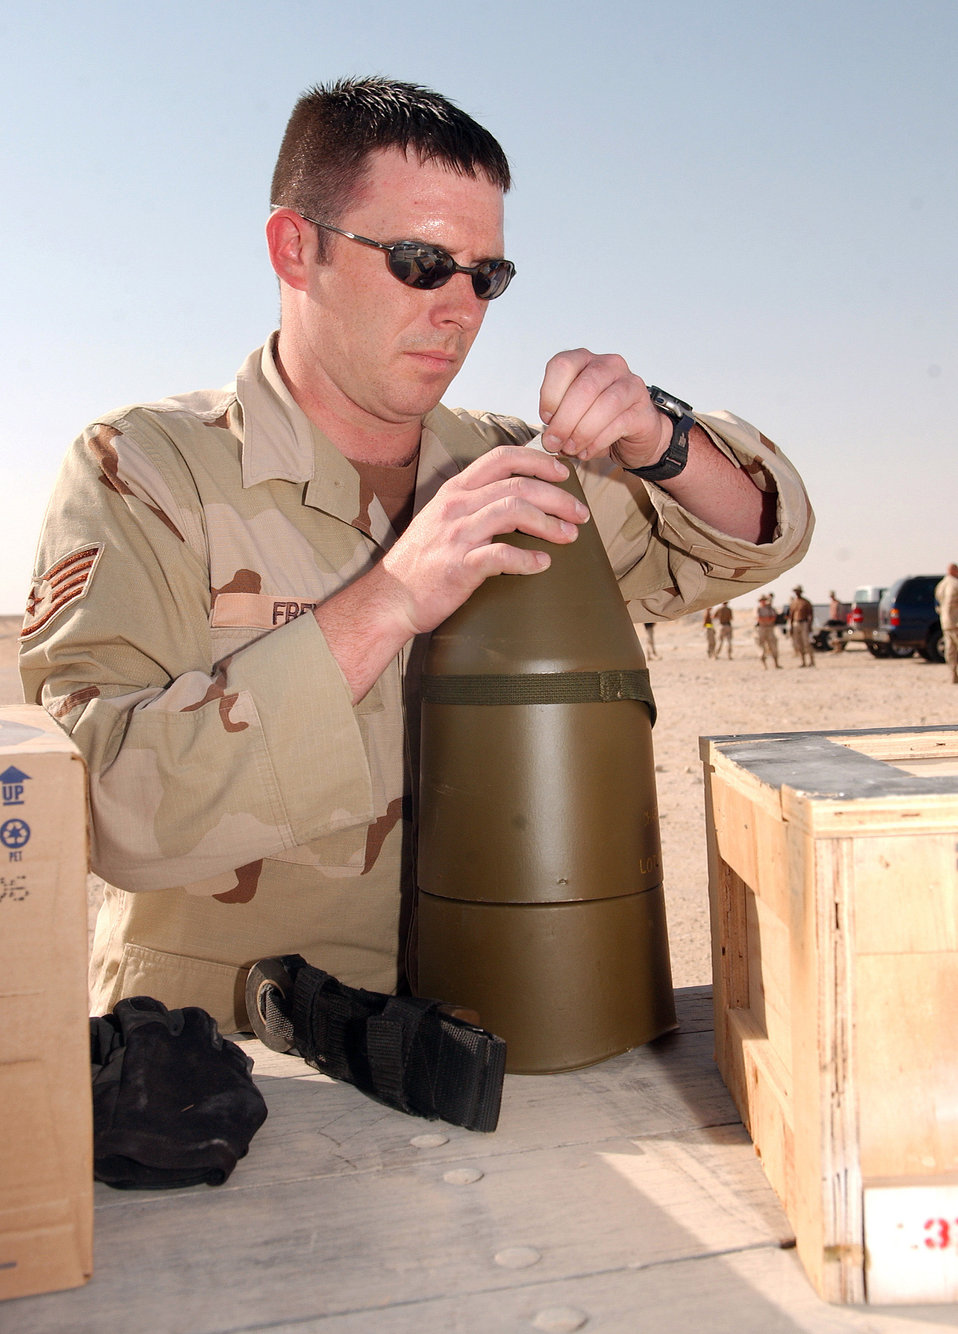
Bomb

OPERATION IRAQI FREEDOM -- Staff Sgt. Douglas Frey inspects a bomb at an undisclosed location recently. Sergeant Frey is assigned to the 379th Expeditionary Civil Engineer Squadron.